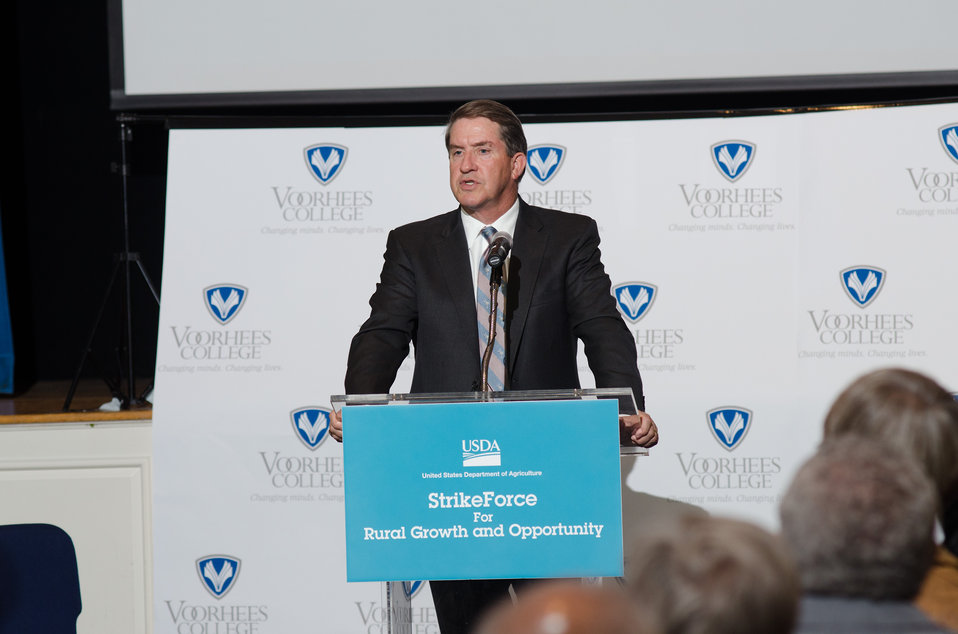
South Carolina Commissioner of Agriculture Hugh Weathers speaks at the U.S. Department of Agriculture's (USDA) Strike Force for Rural Growth and Opportunity event held at Voorhees College in Denmark, SC, on Tuesday, March 26, 2013.